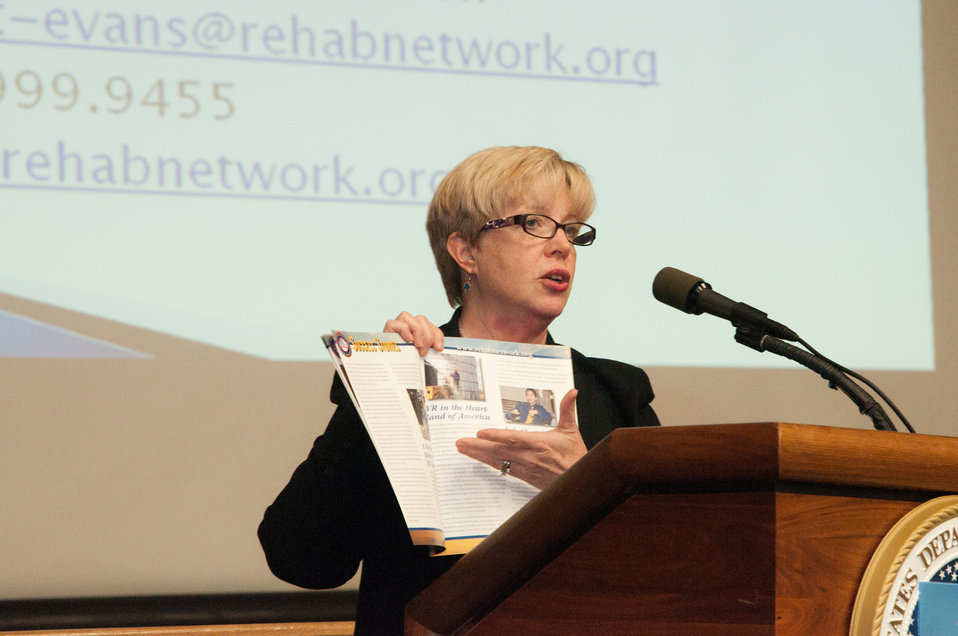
Council of State Administrator’s of Vocational Rehabilitation (CSAVR) Business Director Kathy West Evans discusses the CSAVR Memorandum of Understanding (MOU) and how it can help disability employment managers in the Federal government at the U.S. Department of Agriculture (USDA) Office of Human Resources Management (OHRM) Disability Employment Program Team Training at USDA in Washington, D.C. Tuesday, May 14, 2013.